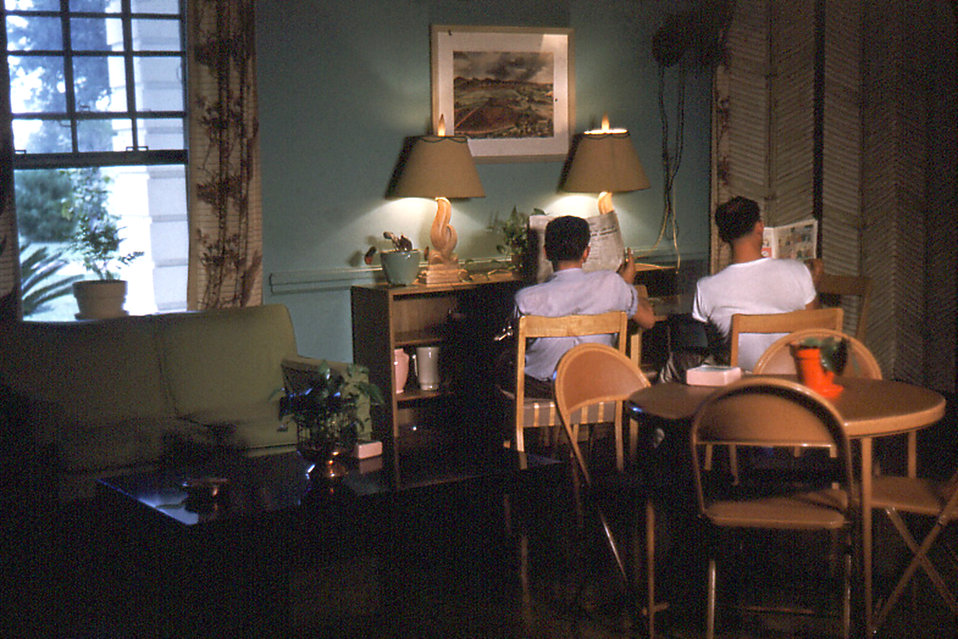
This historic image depicted typical scene one would encounter in the Carville, Louisiana Leprosarium's hospital lounge, where patients were able to read and relax before, and after treatment, or merely to visit with one another. Being a self-contained compound, the hospital was equipped with its own power plant, storehouse, patient treatment centers, which included a dental office, food-processing facilities, i.e., a cafeteria, and its own cemetery. In such settings, these patients who were sequestered on the leprosarium premises, were kept apprised of local and world events by reading newspapers in settings such as the one depicted here.